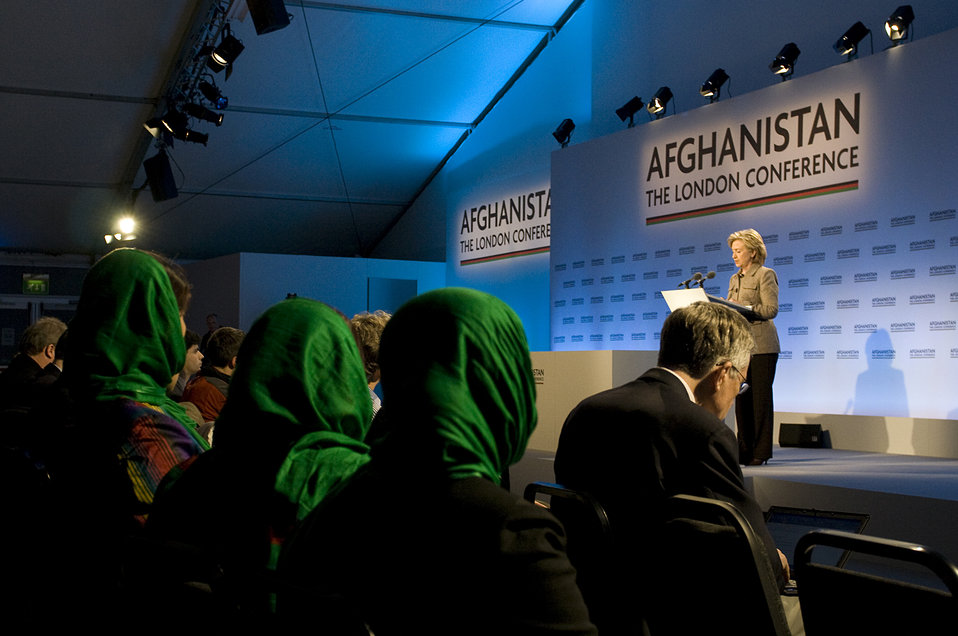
London Conference on Afghanistan

U.S. Secretary of State Hillary Clinton provides remarks at the London Conference on Afghanistan January 28, 2010.